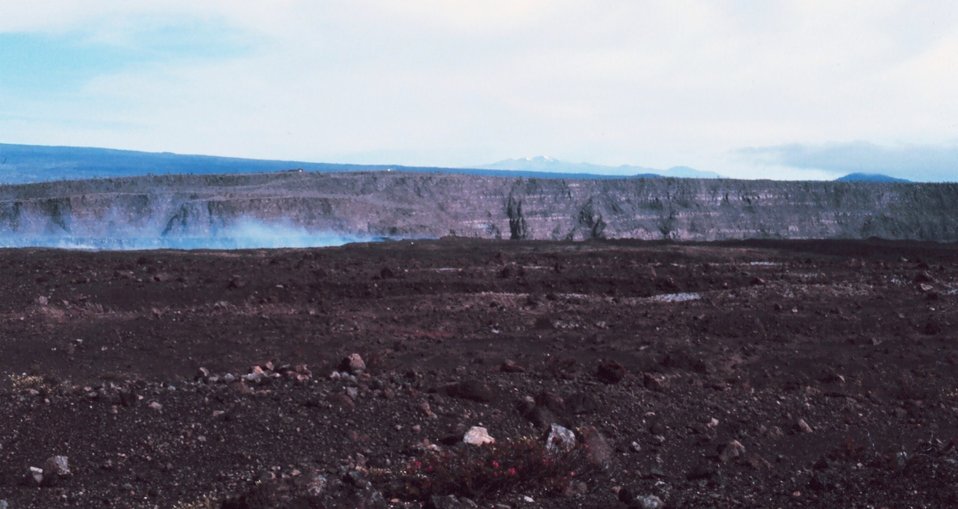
Kilauea Crater at Volcanoes National Park